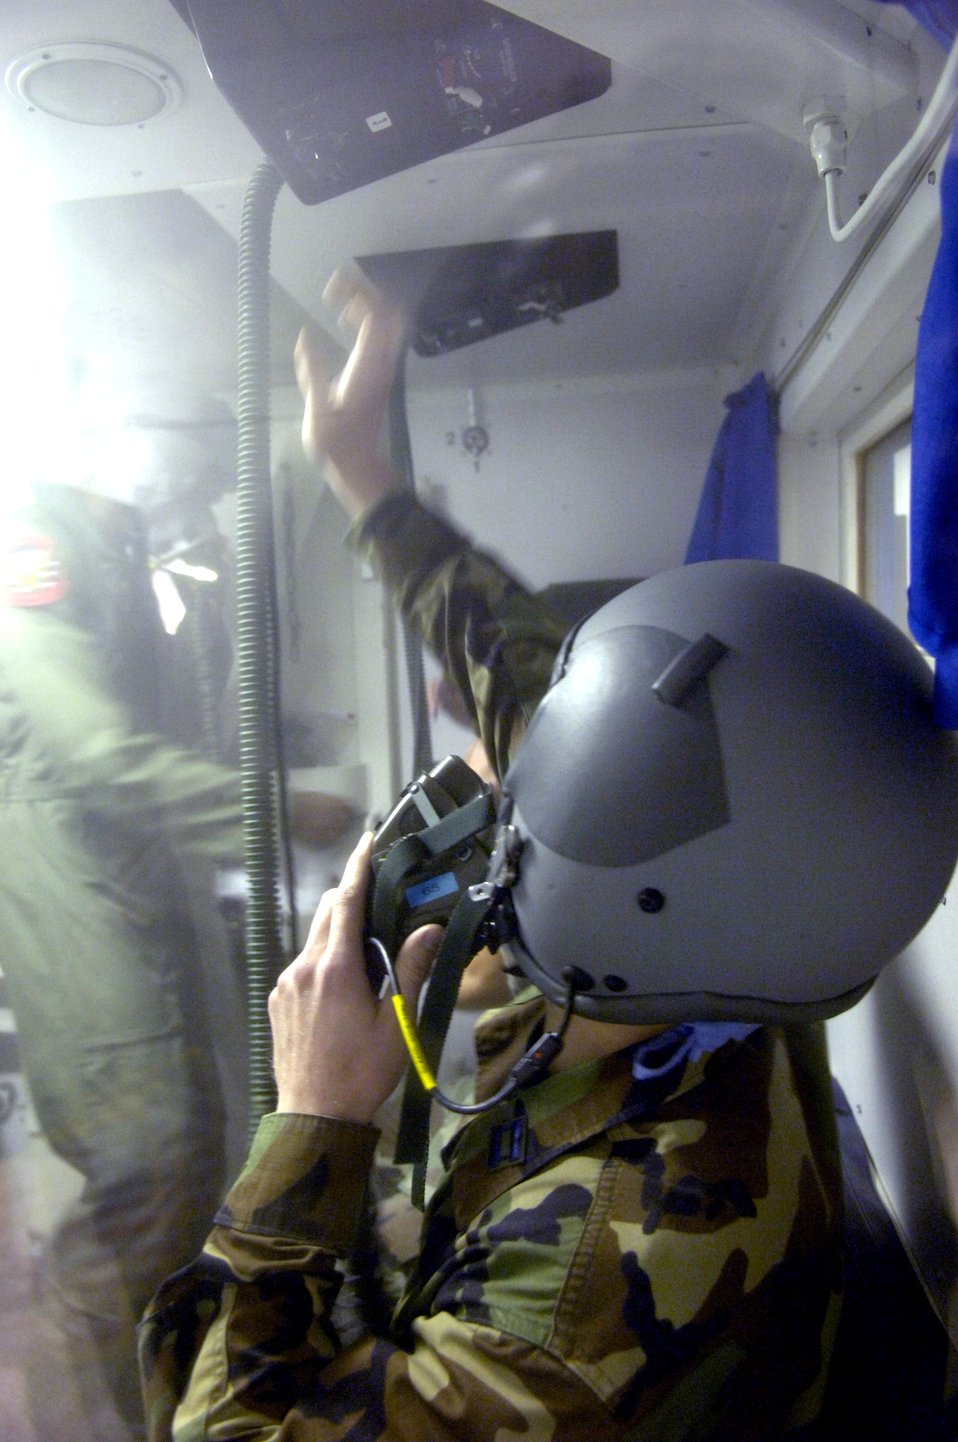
Physiological training crucial for aircrews

A student reaches to put his oxygen regulator on 100 percent oxygen during the rapid decompression portion of physiological training at Peterson Air Force Base, Colo., on Aug. 9. Physiological training is taught by Airmen at the 21st Aerospace Medical Squadron and provides students a better understanding of survival in the flight environment.